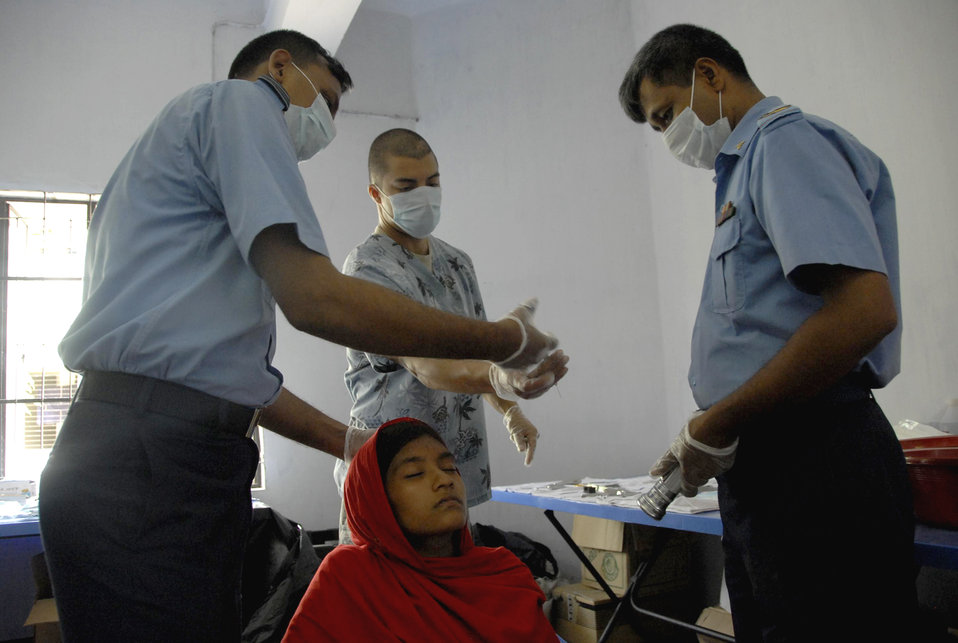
Patient care top priority

Bangladesh air force squadron leader Hannan, a dentist, receives an instrument from Staff Sgt. Michael Maldonado during Operation Pacific Angel June 13, 2010, in Jessore, Bangladesh. Operation Pacific Angel is a joint and combined humanitarian assistance operation conducted in the Pacific area of responsibility to support U.S. Pacific Command's capacity-building efforts. Sergeant Maldonado is a dental assistant from the 15th Aeromedical-Dental Squadron at Joint Base Pearl Harbor-Hickam, Hawaii.